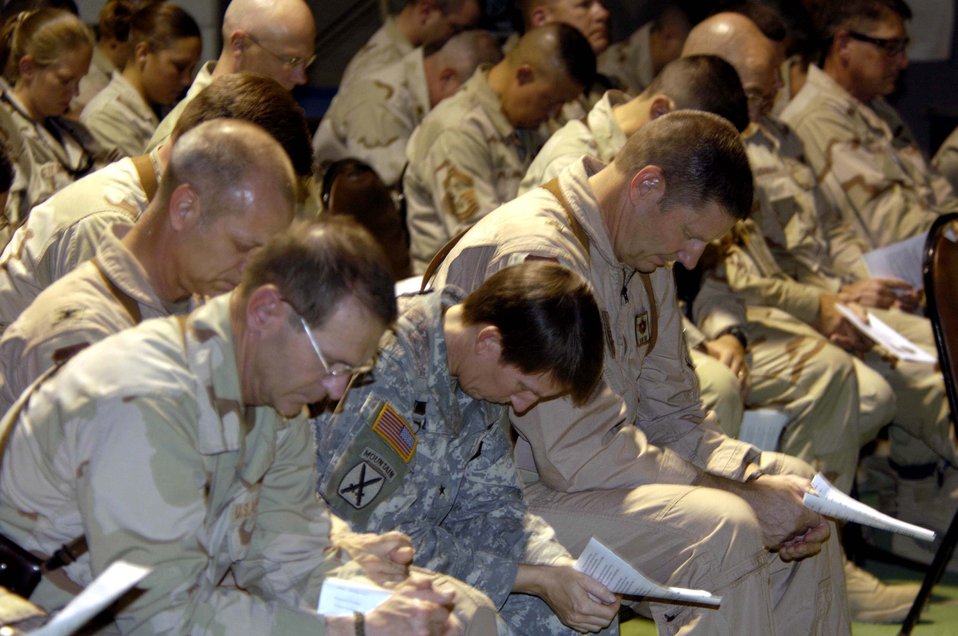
Airmen, Soldiers say farewell to comrade in Iraq

Airmen and Soldiers at Balad Air Base, Iraq, share a moment of prayer during a memorial service for Master Sgt. Brad A. Clemmons Aug. 24. The ceremony, attended by about 400 Airmen from the 332nd Air Expeditionary Wing and Soldiers of the 3rd Corps Support Command, honored Sergeant Clemmons who died Aug. 21 when his vehicle struck an improvised explosive device near Taji, Iraq.